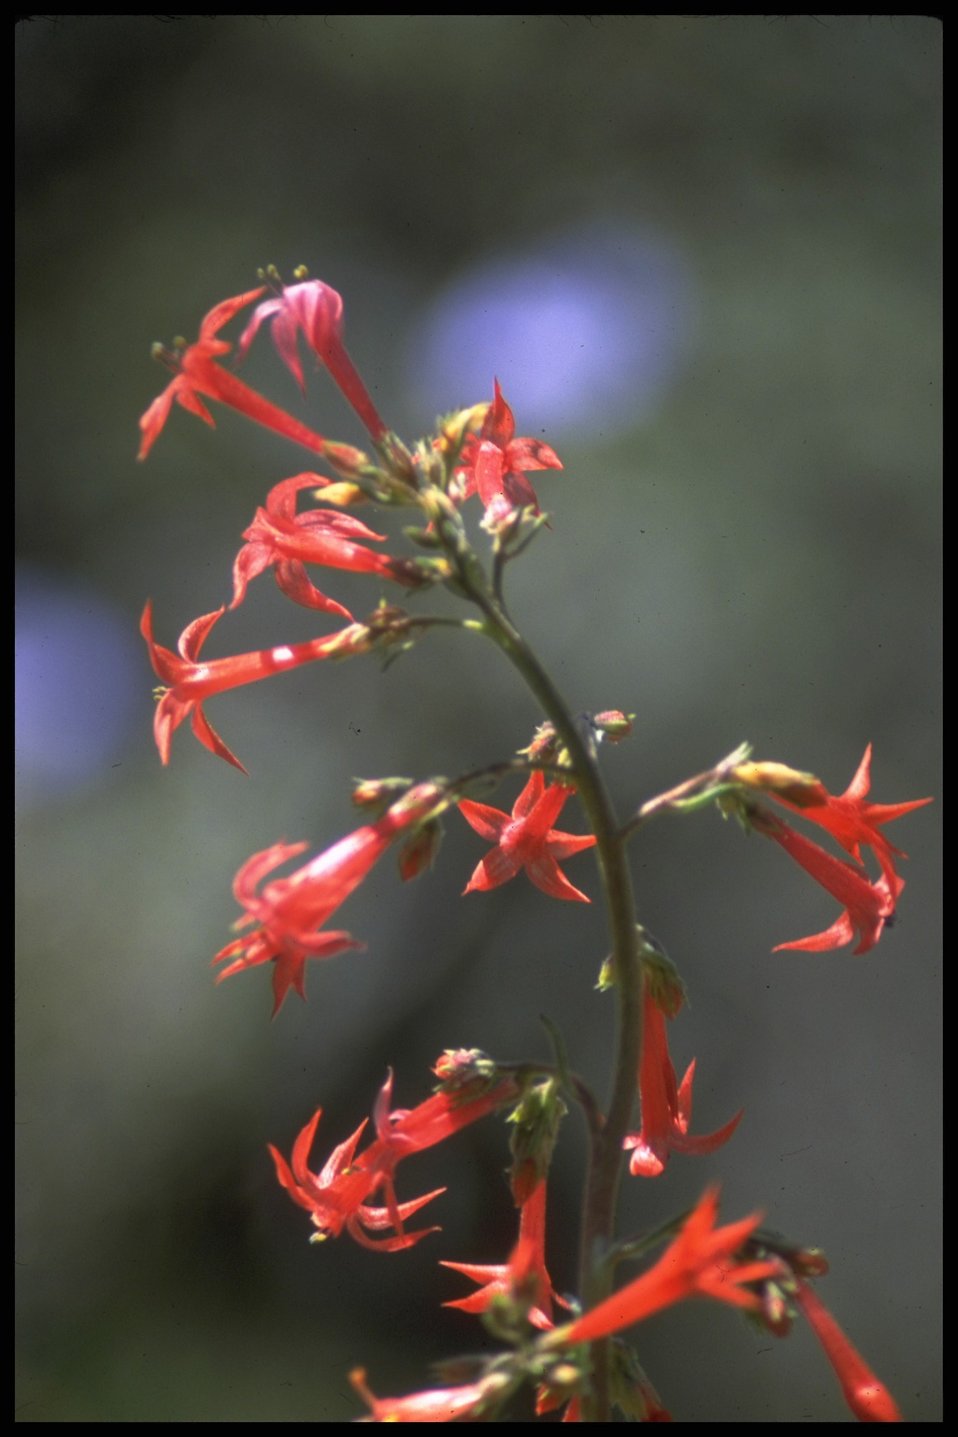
Close shot of Scarlet Gilia, Lakeview District.